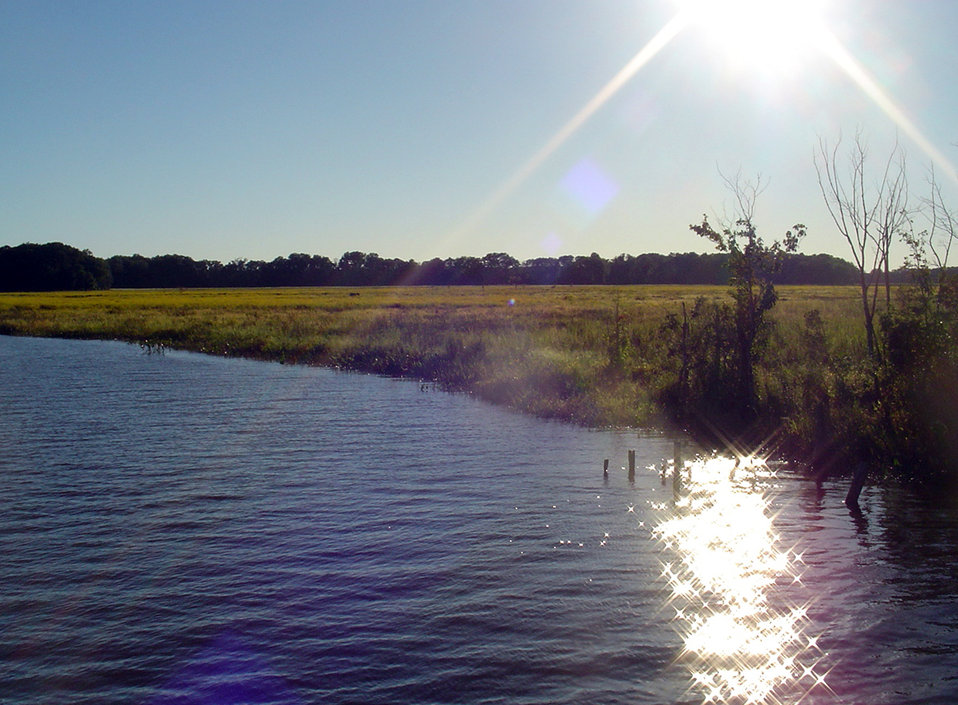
Cat Point Creek

Rappahannock River Valley National Wildlife Refuge.